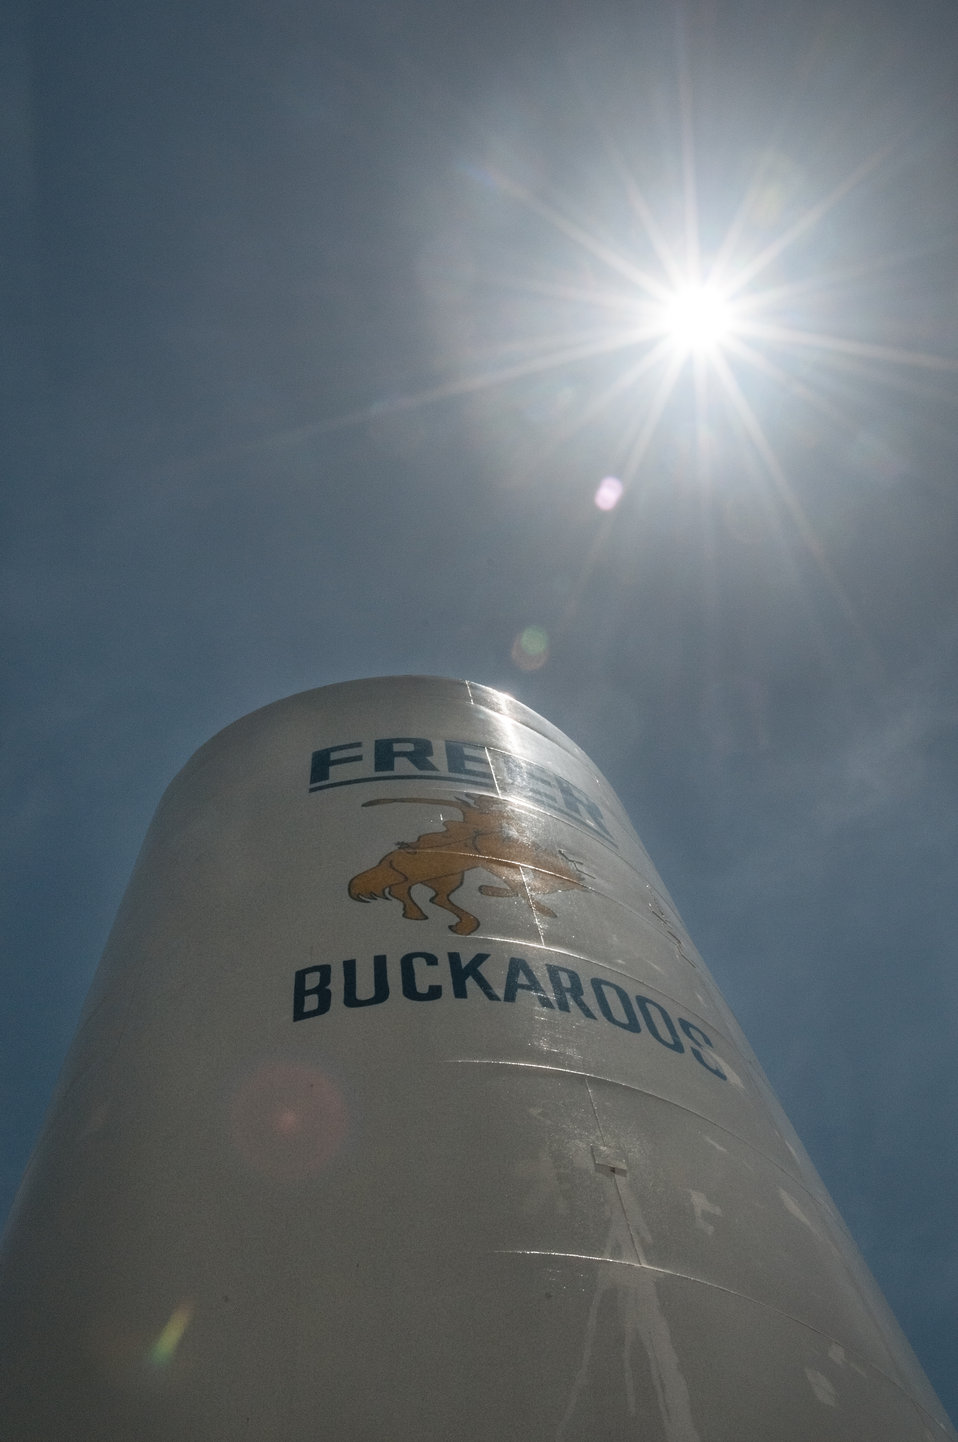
Processed water is held in this primary ground storage tank and at the Freer Water Control and Improvement District (FWCID) Arsenic Removal System Site, on Tuesday, June 18, 2013, in Freer, Texas.

FWCID benefits from the financial assistance of the U.S. Department of Agriculture (USDA) Rural Development (RD) to complete a two-phase approach to meeting the city’s water supply and safety needs, on Tuesday, June 18, 2013. Although, the naturally occurring arsenic levels have remained constant for more than a century, the Environmental Protection Agency (EPA) safe level standards have established lower levels of arsenic to be safe for human consumption. To meet those levels FWCID approached USDA and was awarded a $986,000 loan for Phase I, to install two new water wells, each rated at 167 gallons per minute (creating a total of eight wells); 13,600 feet of well collection lines; and 15,000 linear feet of well control line to remotely control the well pumps and the 1,000,000 gallon holding tank at the well facility, which supplies water to the new Arsenic Removal System (Phase II). Previously, water was manually controlled by personnel who knew when and how long to manually opened and closed water valves or started well pumps to ensure holding tank levels were within operating levels during peek and slack times of the day. Phase II was a combination of a $1,832,000 loan and a $1,258,750 grant, which provided for the customized arsenic removal system, seen in these photos. The system includes a new 3,530 sp. ft. facility, on a .76-acre site, and houses the operations room, computer and power system, laboratory room, and pump systems. The entire operation can be monitored through a desktop computer interface system. The computer-controlled system ensures raw water is fed to the arsenic removal pump system, which works in sequence to maintain a constant pressure, when needed, to pump water through (blue) arsenic removal absorber vessels, and into ground storage tanks that feeds the residential and commercial needs of the city. Samples of water are periodically tested; and so far the arsenic levels have been below 1 part per billion (PPB), well under the 10 PPB limit.